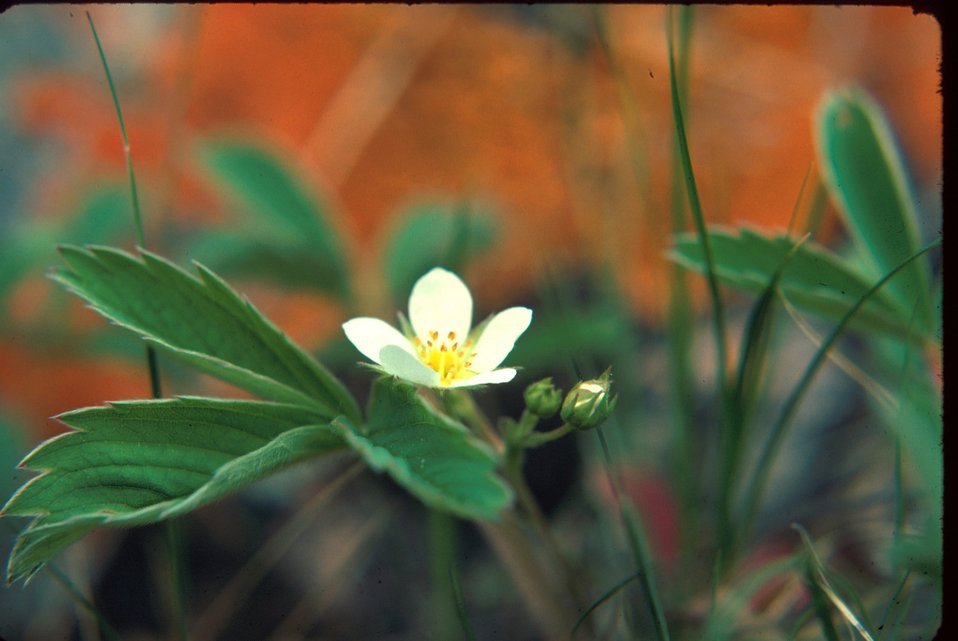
Frageria Strawberry Wildflower